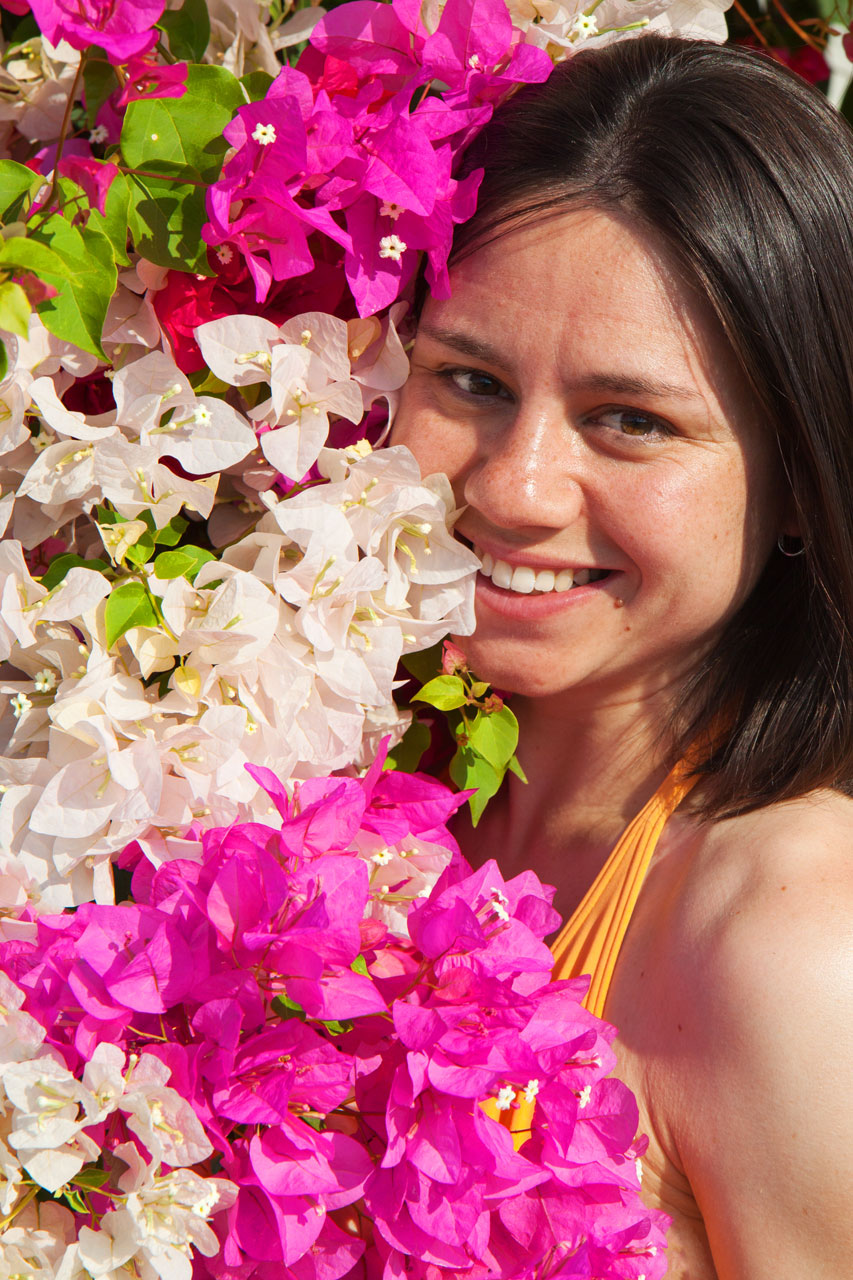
Young woman surrounded with flowers

Young woman among paper flower (bougainvillea glabra).